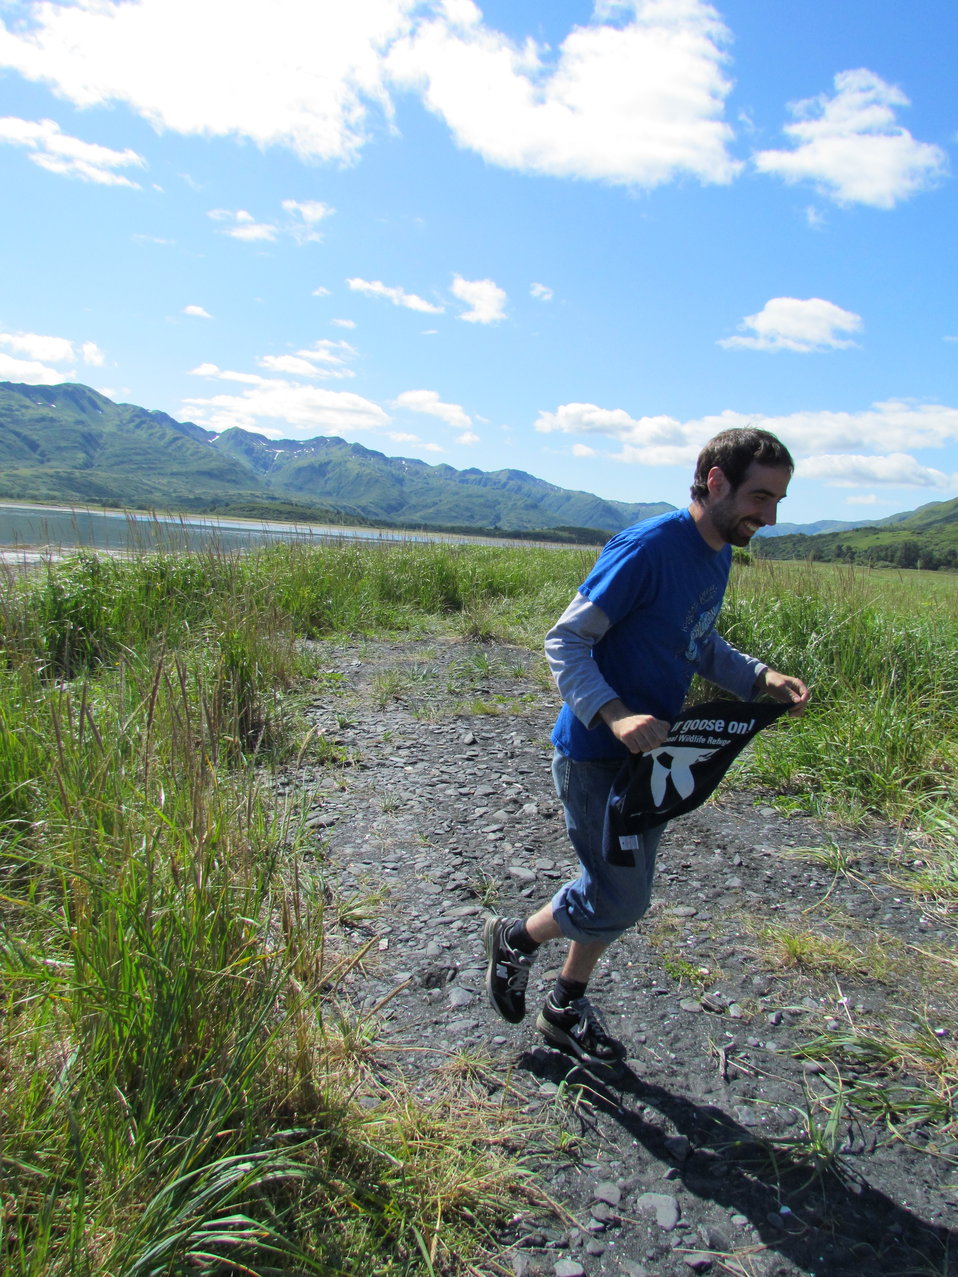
Get Your Goose On! - Alaska Style

Student Conservation Association intern, Rory Psotka

Credit: Shelly Lawson / USFWS

The Kodiak National Wildlife Refuge is a United States National Wildlife Refuge in the Kodiak Archipelago in southwestern Alaska, United States.

The Kodiak National Wildlife Refuge includes the southwestern two-thirds of Kodiak Island, Uganik Island, the Red Peaks area of Afognak Island and all of Ban Island in the archipelago. It encompasses 1,990,418 acres (8,054.94 km2).[2] The refuge is administered from offices in Kodiak.

The refuge contains seven major rivers and about 100 streams. It is a spawning ground for all six species of Pacific Ocean salmon, trout and several other fish species, as well as a nesting ground for 250 species of bird, many of which feed on salmon. The refuge has only six native species of mammals: Kodiak brown bear, red fox, river otter, ermine, little brown bat and tundra vole. The non-native mammals Sitka deer, mountain goat, Roosevelt elk, snowshoe hare and beaver were introduced to the archipelago between the 1920s and 1950s and are now hunted and trapped.

The climate of the refuge is that of southern Alaska, mild and rainy. Many areas in the refuge are densely forested with Sitka Spruce at lower elevations. There are grasslands in drier areas and at higher elevations. The refuge contains several small glaciers.